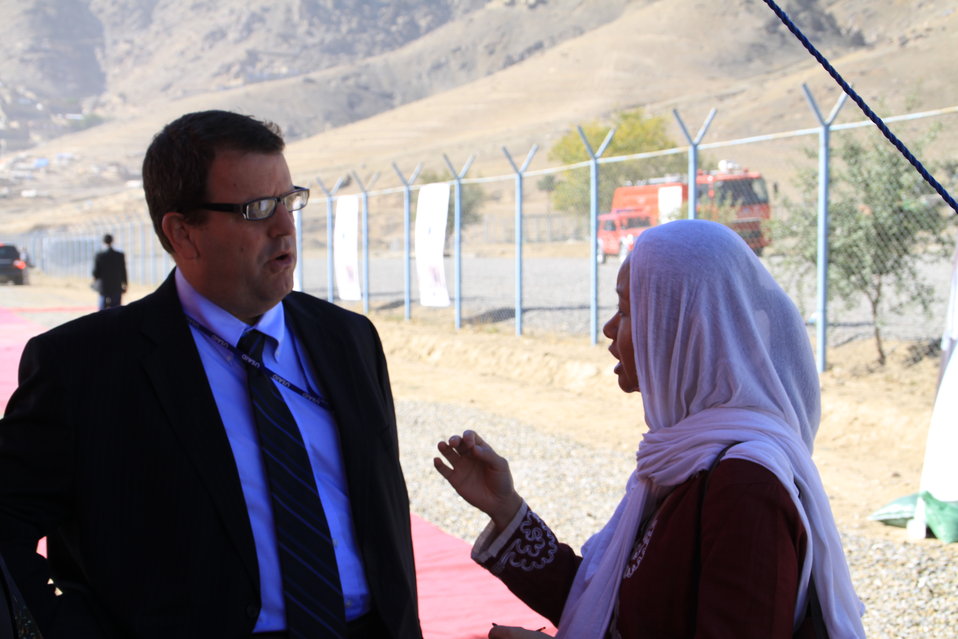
AVIPA Plus Wheat Seed Distribution 101005

US Ambassador Karl Eikenberry and USAID Acting Mission Director Kevin Brownawell joined the Minister of Agriculture, Irrigation and Livestock, H.E. Minister Mohammed Rahimi in signing a Memorandum of Understanding and distributing vouchers to area farmers for wheat and fertilizer.